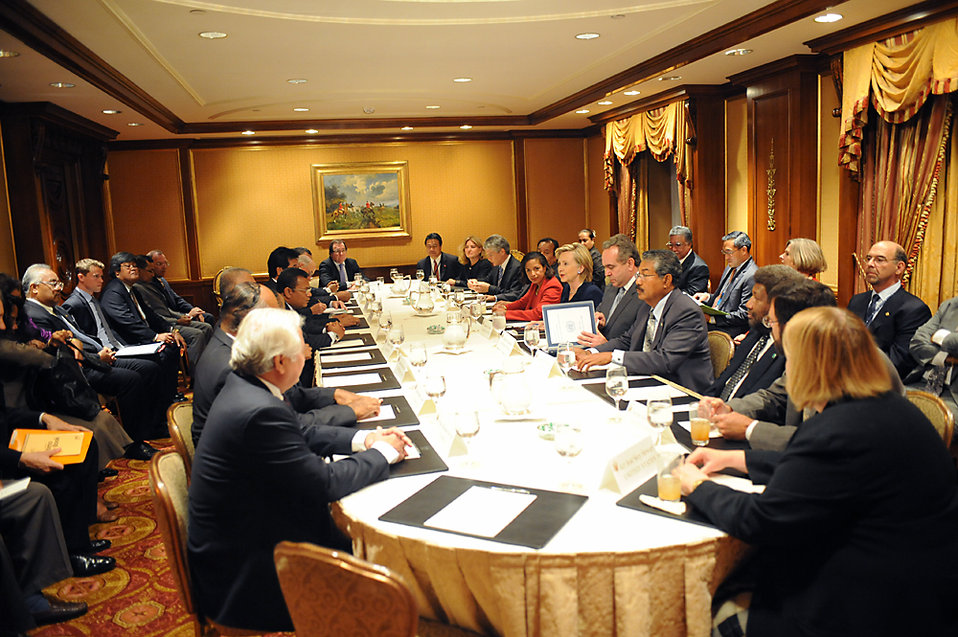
UNGA 2009: Secretary Clinton Meets With Pacific Island Leaders

U.S. Secretary of State Hillary Rodham Clinton meets with Pacific Island leaders at the Waldorf Astoria hotel during the 64th Session of the UN General Assembly in New York City, New York September 21, 2009.